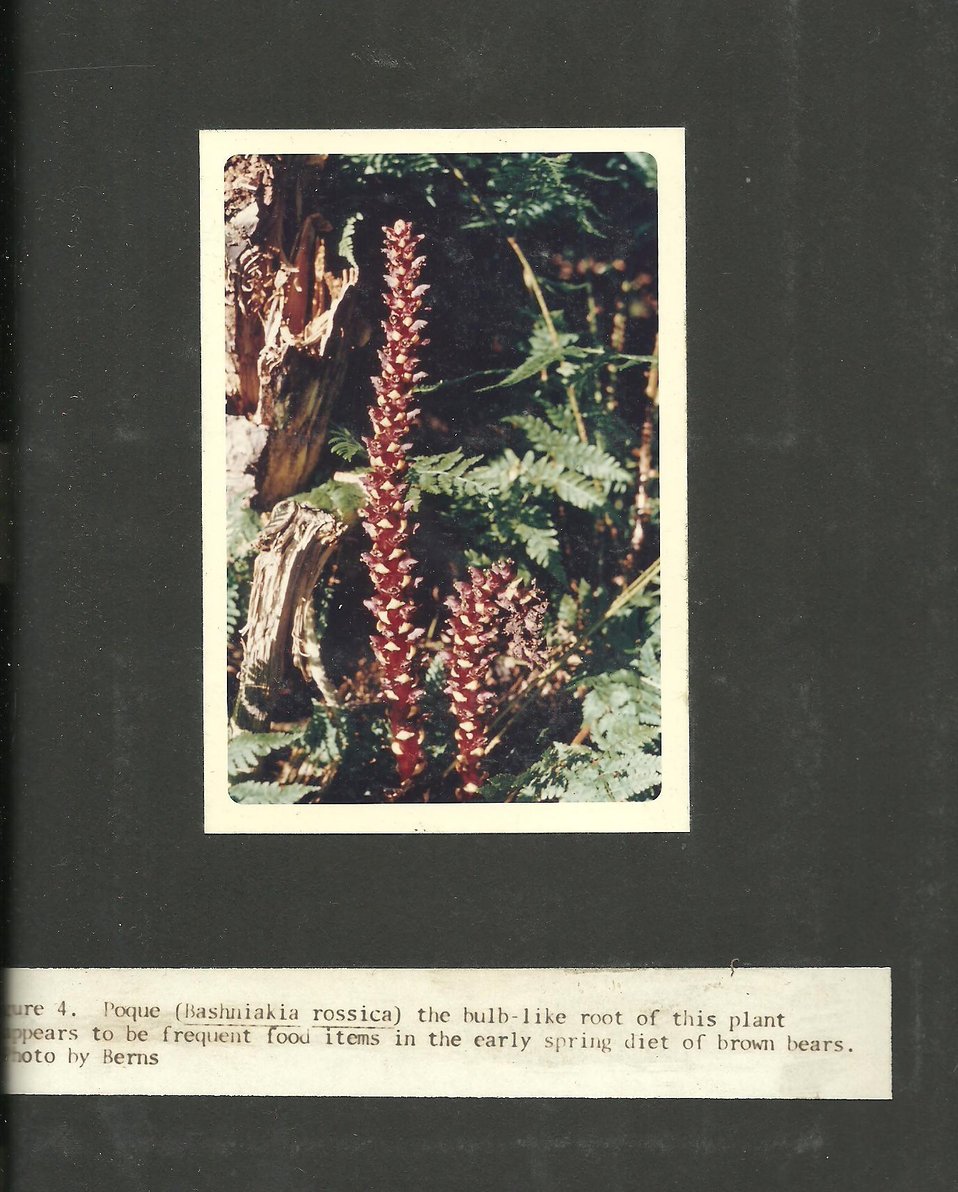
(1965) Poque

Credit: USFWS

Source and Contact: Kodiak National Wildlife Refuge